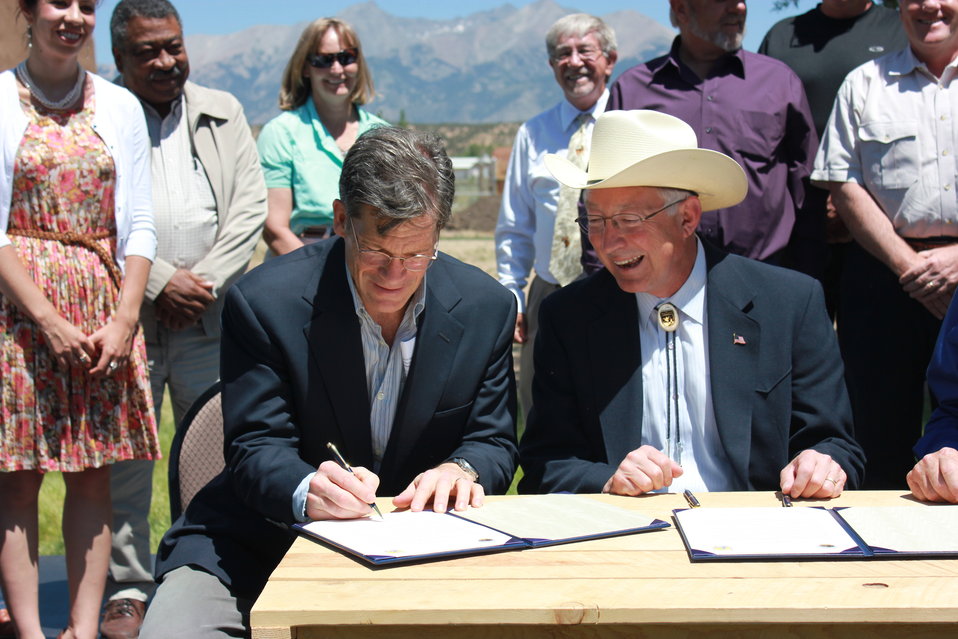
Historic Conservation Easement in Sangre de Cristo Mountains